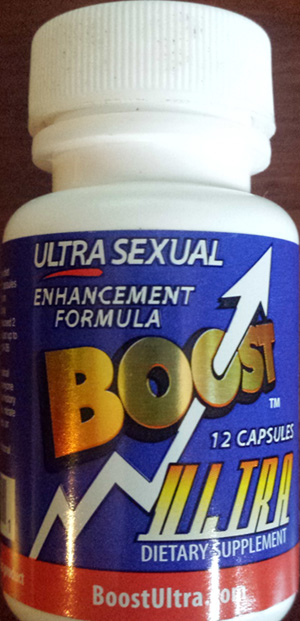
RECALLED – Dietary Supplement for Sexual Enhancement

January 9, 2014 – Product Recall – Midwest Wholesale Issues Voluntary Recall of Boost Ultra, XZone Gold, Sexy Monkey, Triple MiracleZen Platinum, Magic for Men, 'New' Extenze, and New XZen Platinum Marketed as a Dietary Supplements Due to the Presence of Undeclared Drug Ingredients.